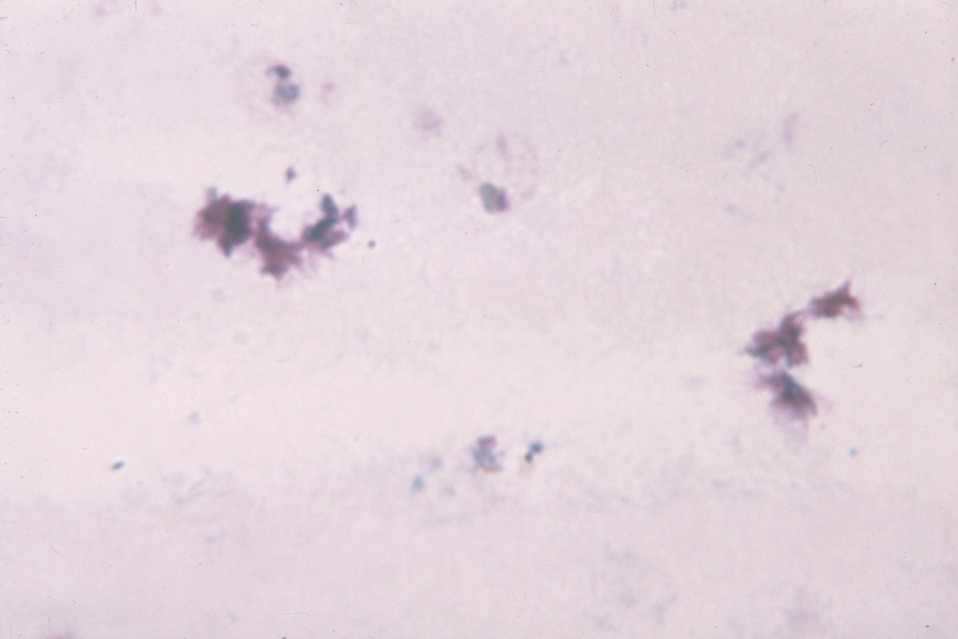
This thick film photomicrograph reveals evidence of the malaria causing parasite Plasmodium ovale.